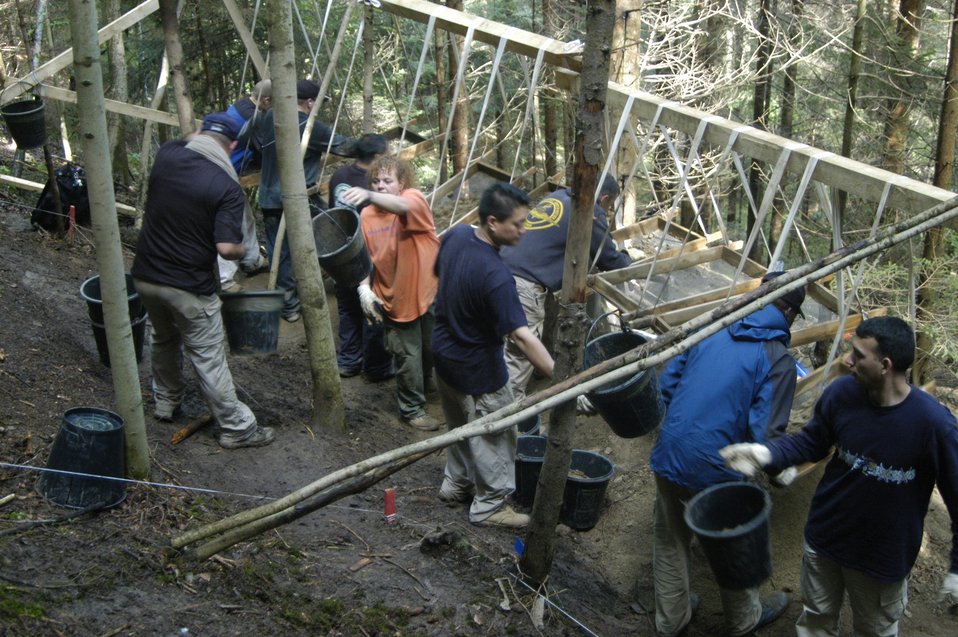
JPAC team returns from Austria

An 18-member team from the Joint POW/MIA Accounting Command works together excavating a crash site near Vostenhof, Austria, on Aug. 13. The team, including a forensic anthropologist, explosive ordnance disposal technician and field medic, are deployed from Hickam Air Force Base, Hawaii, returned Oct. 1 after 45 days in Austria attempting to recover the remains of 1st Lt. Stanley Dwyer and gunner Sgt. John Boros who were lost in the crash May 10, 1944. The mission of JPAC is to achieve the fullest possible accounting of all Americans missing as a result of the nation's past conflicts.